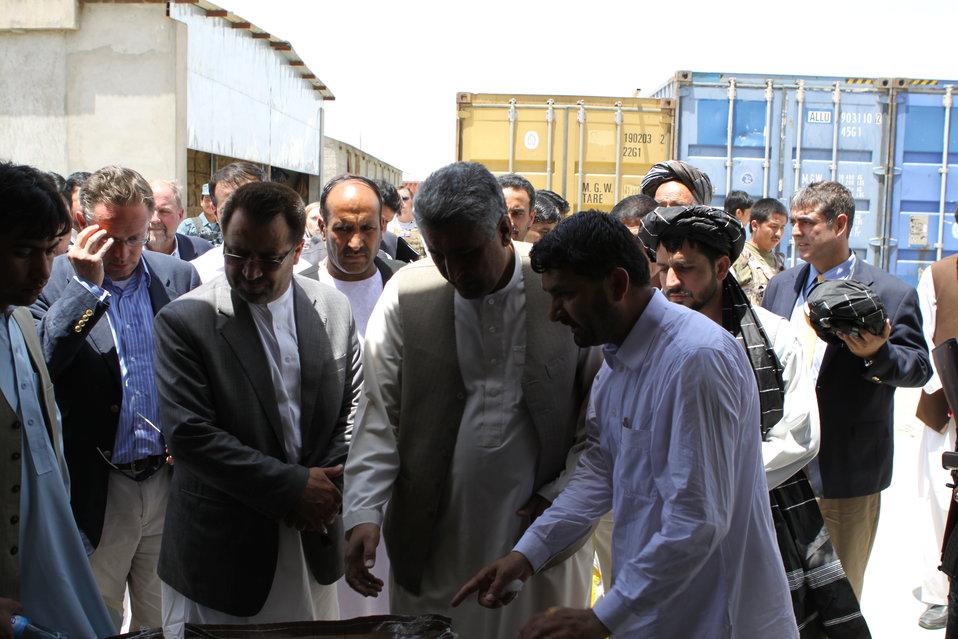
Bolan Poultry Farm